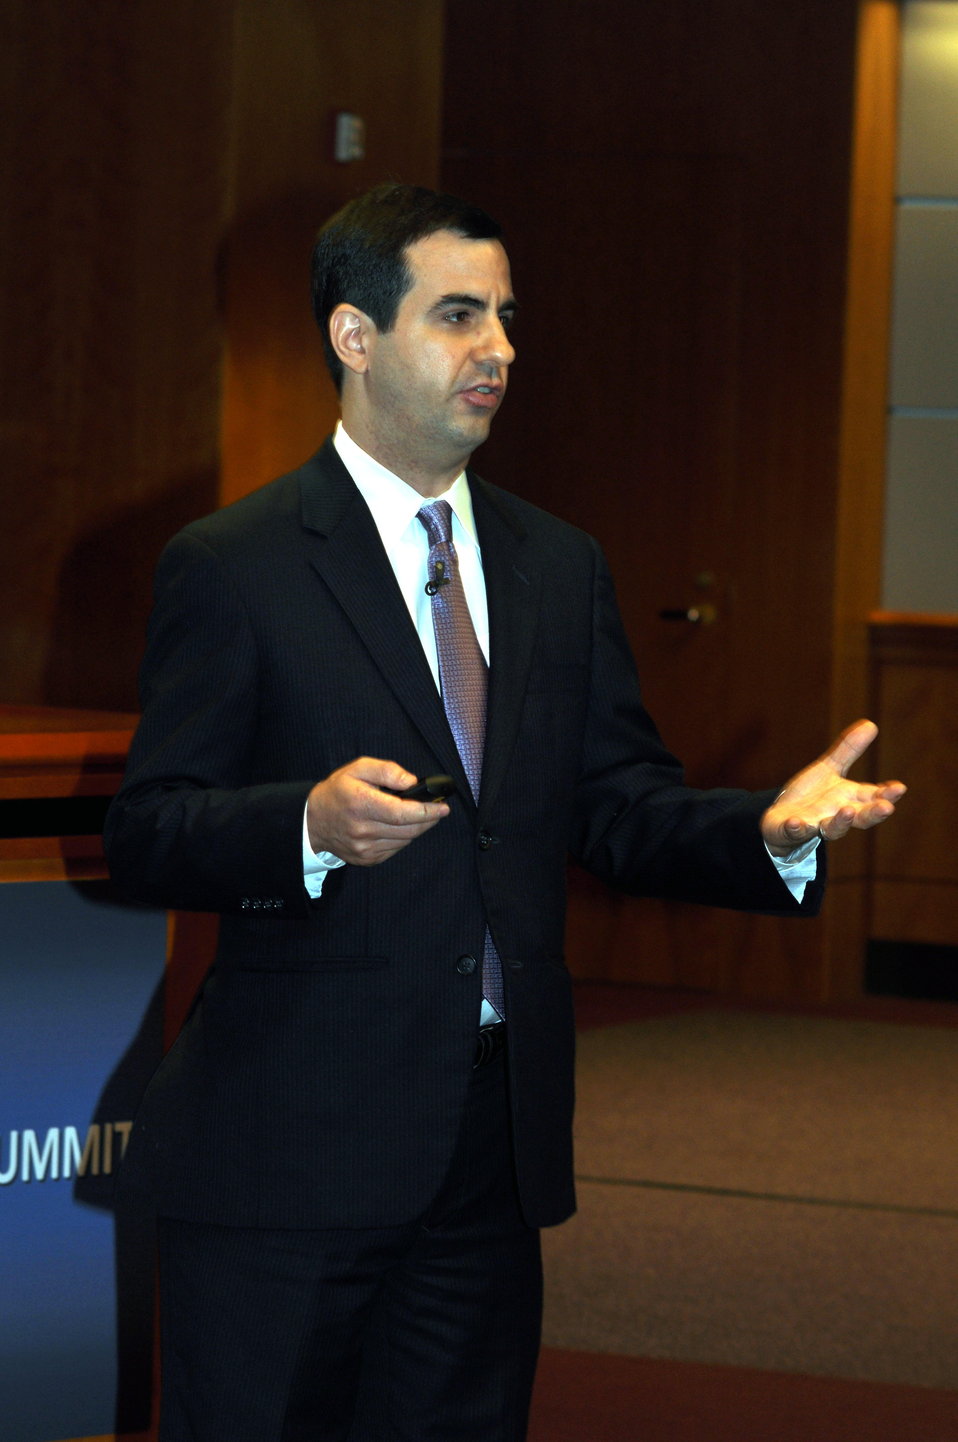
Spectrum Summit